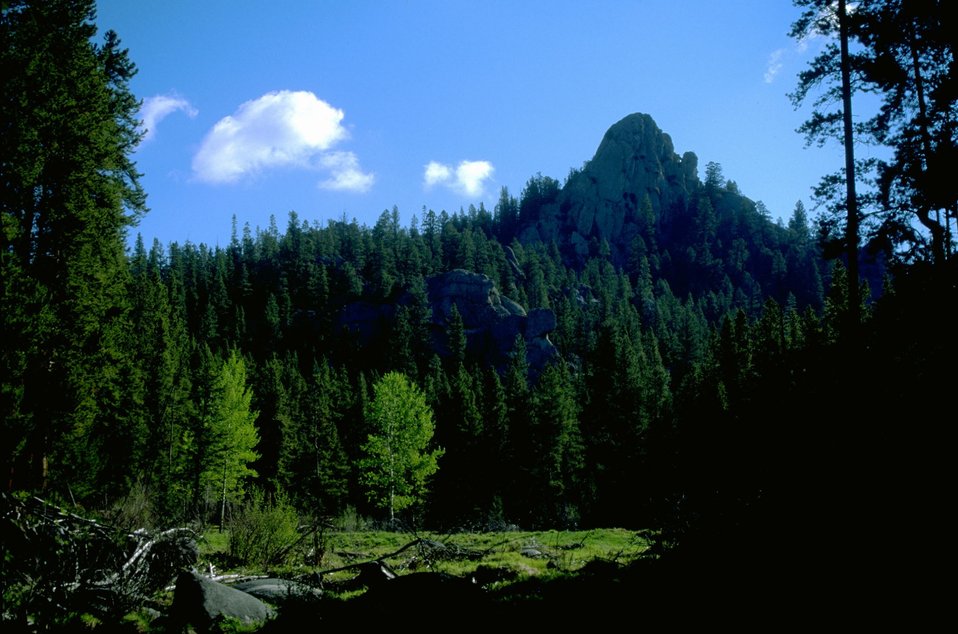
Sun-filled grassy meadow below rock formation